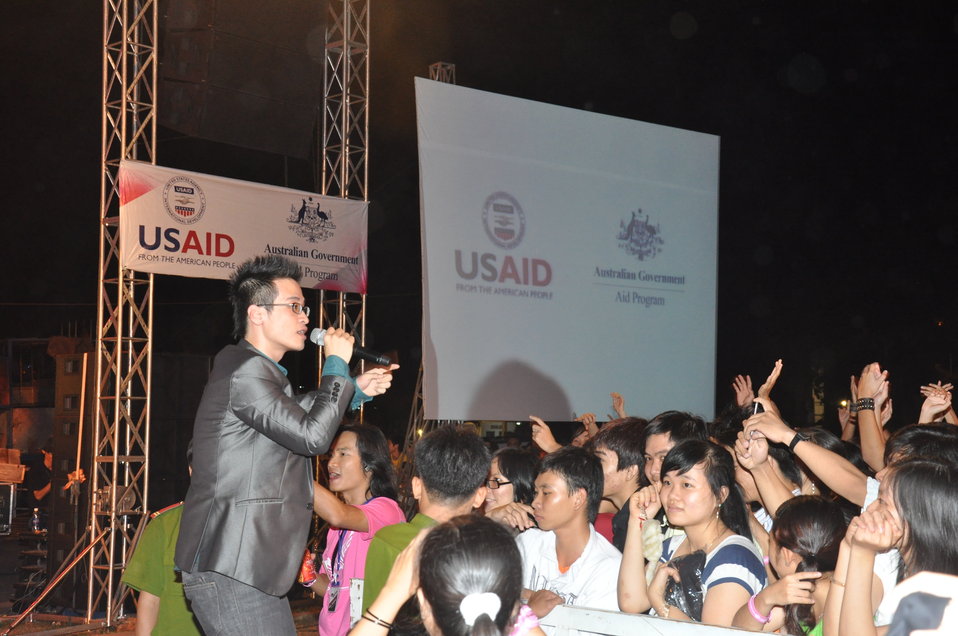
USAID and MTVEXIT concert in Can Tho

Concert in Can Tho against human trafficking, April 10, 2010